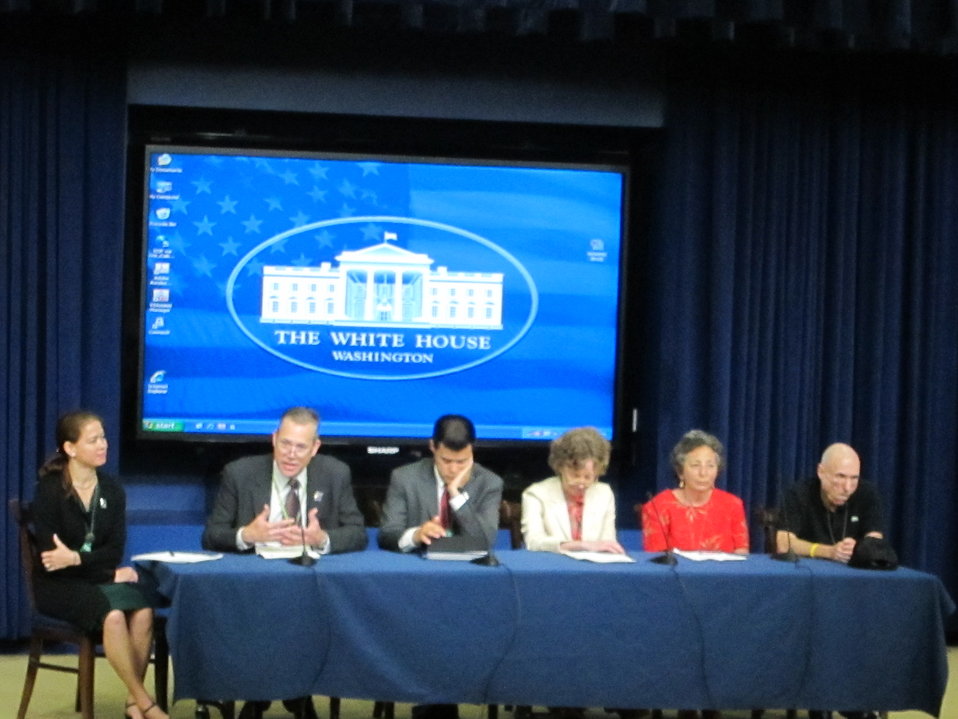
WH 2012 World Hepatitis Day Event